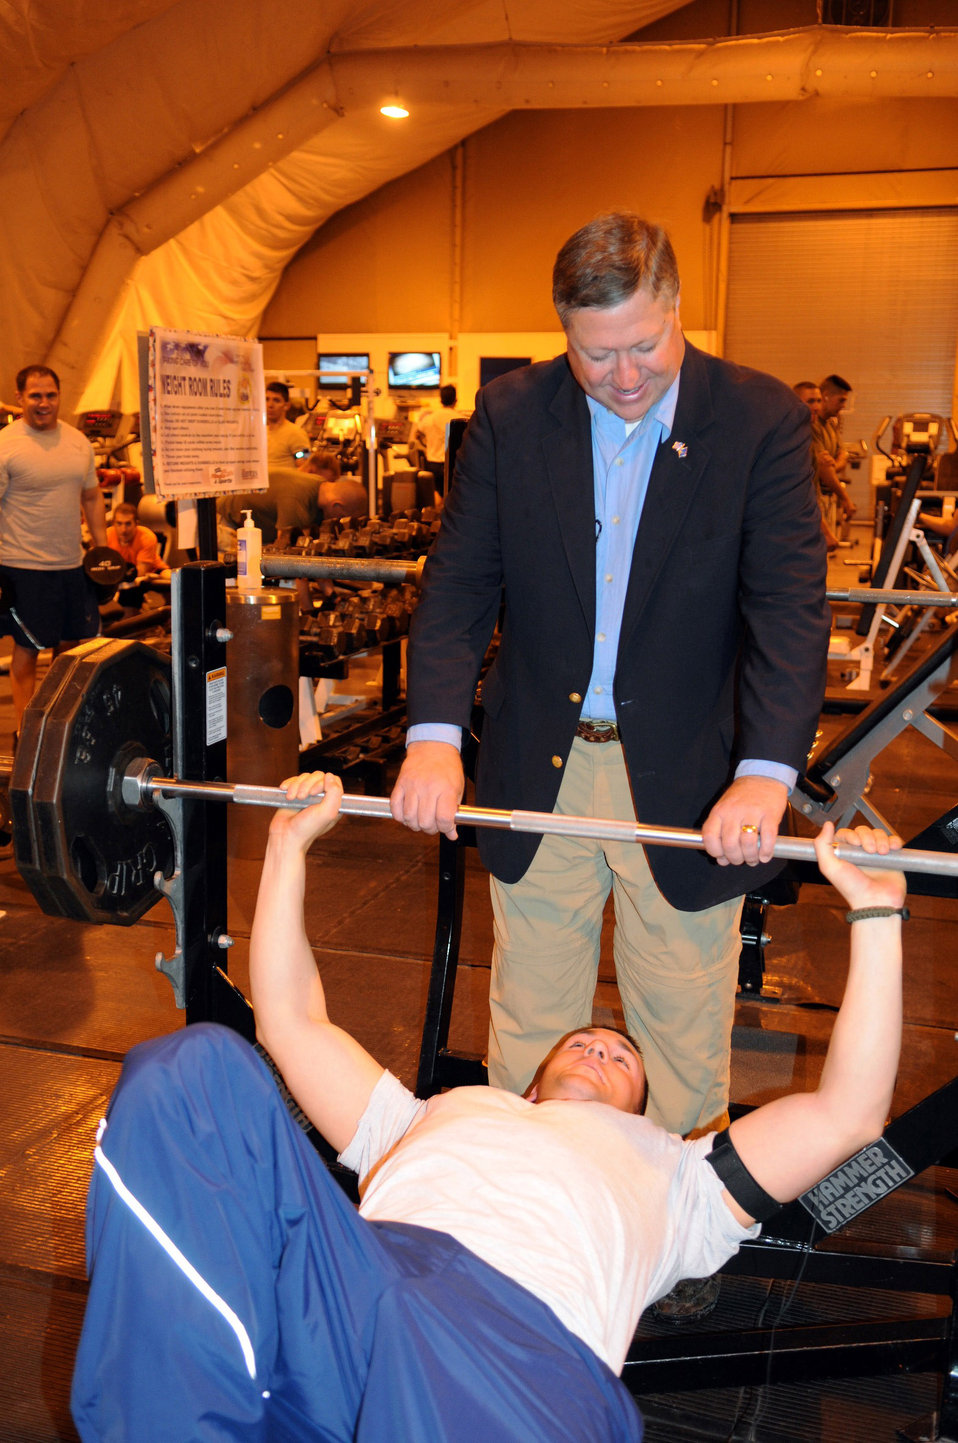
Air Force secretary visits Manas Airmen

Secretary of the Air Force Michael B. Donley spots for Senior Airman Joshua Benedict during a stop at the fitness center Oct. 15 at Manas Air Base, Kyrgyzstan. Secretary Donley toured the base and spoke to Airmen on Air Force issues and priorities. Airman Benedict is assigned to the 376th Expeditionary Security Forces Squadron.